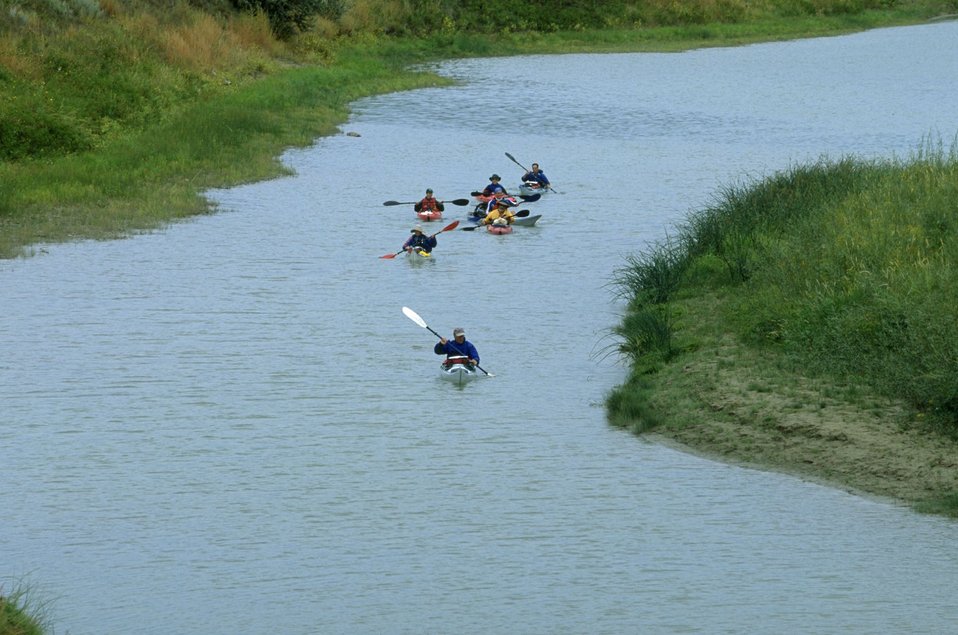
Floating the Upper Missouri River